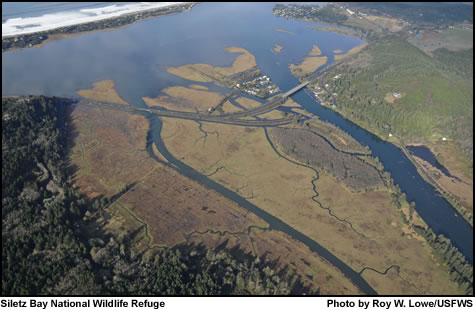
Siletz Bay NWR

Estuarine habitats in the Siletz Bay NWR are among the most scenic estuaries along the Oregon Coast.